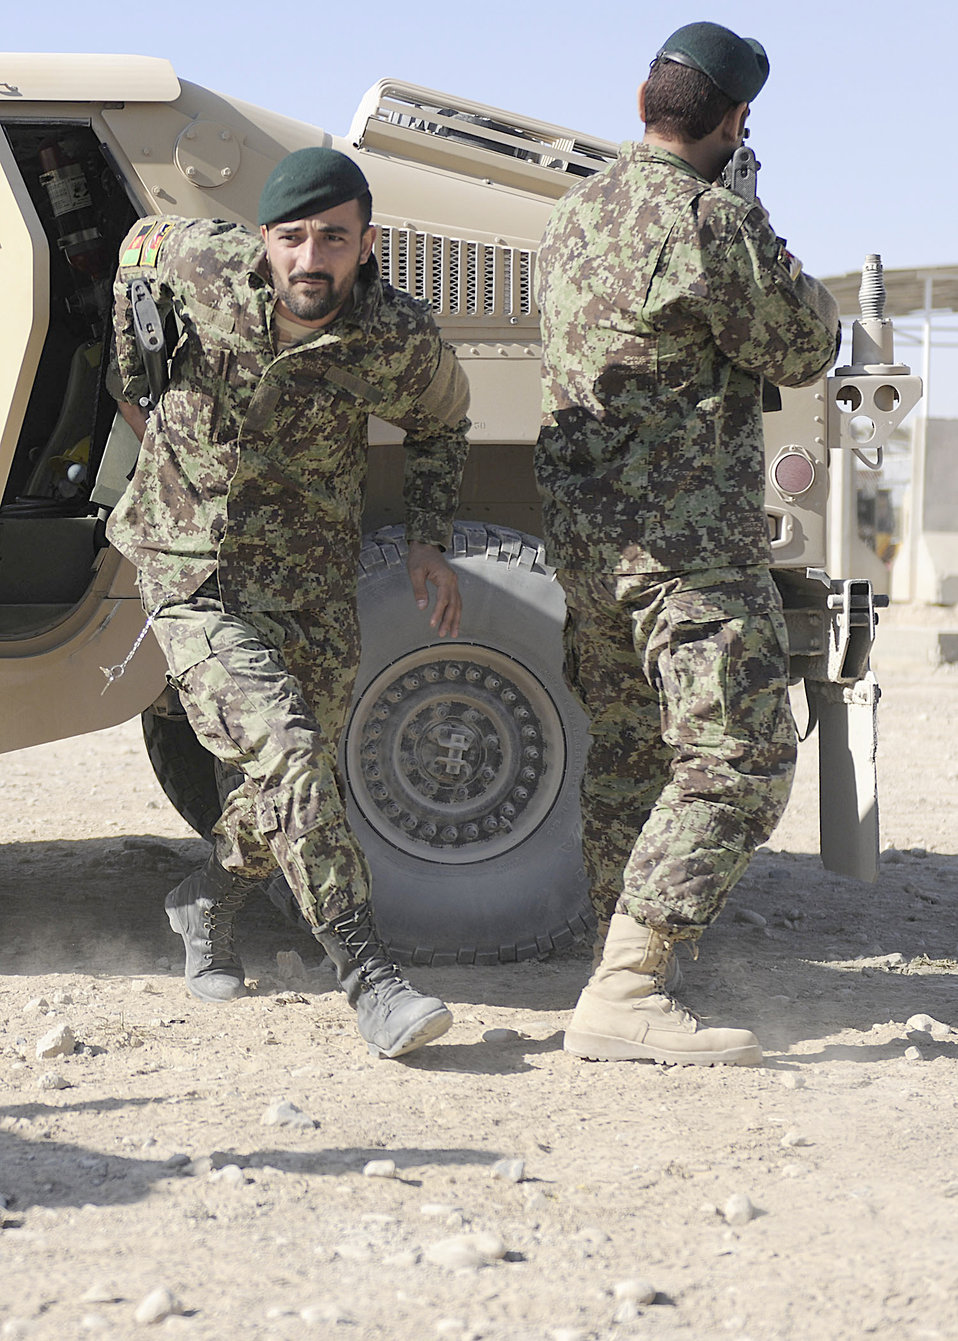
Afghan air force

A member of the Afghan Air Force Kandahar Air Wing Security Kandak exits a Humvee during a training session Nov. 7, 2010, at Kandahar Airfield. The soldiers practiced their Humvee driving skills and dismount procedures after attending a month-long training session taught by 443rd Air Expeditionary Advisory Squadron members.